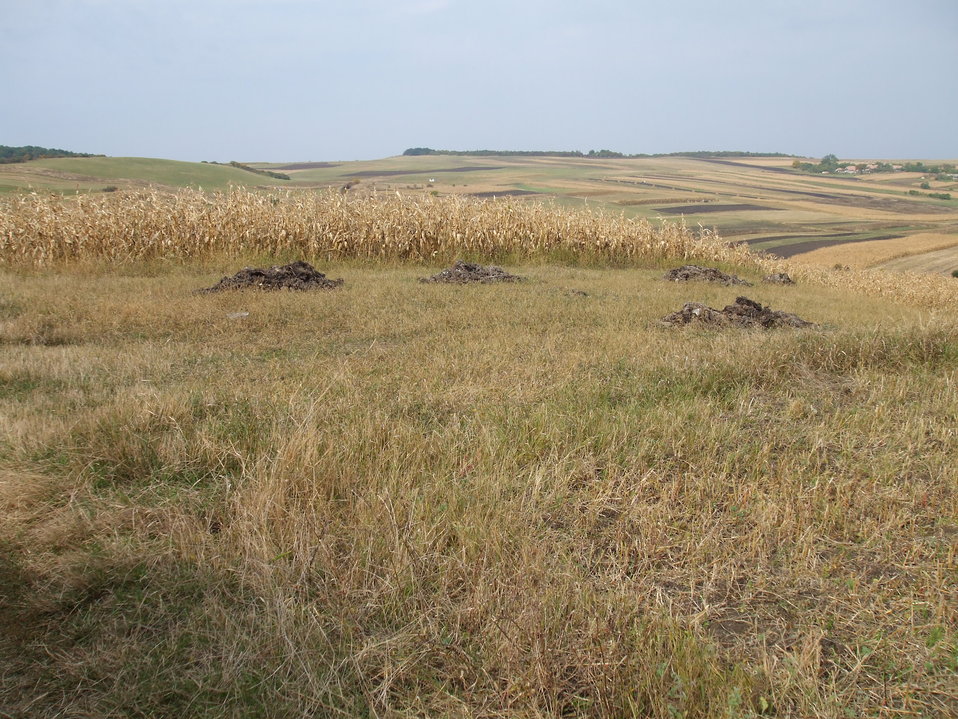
Română: Imagini-Damburile,Cluj